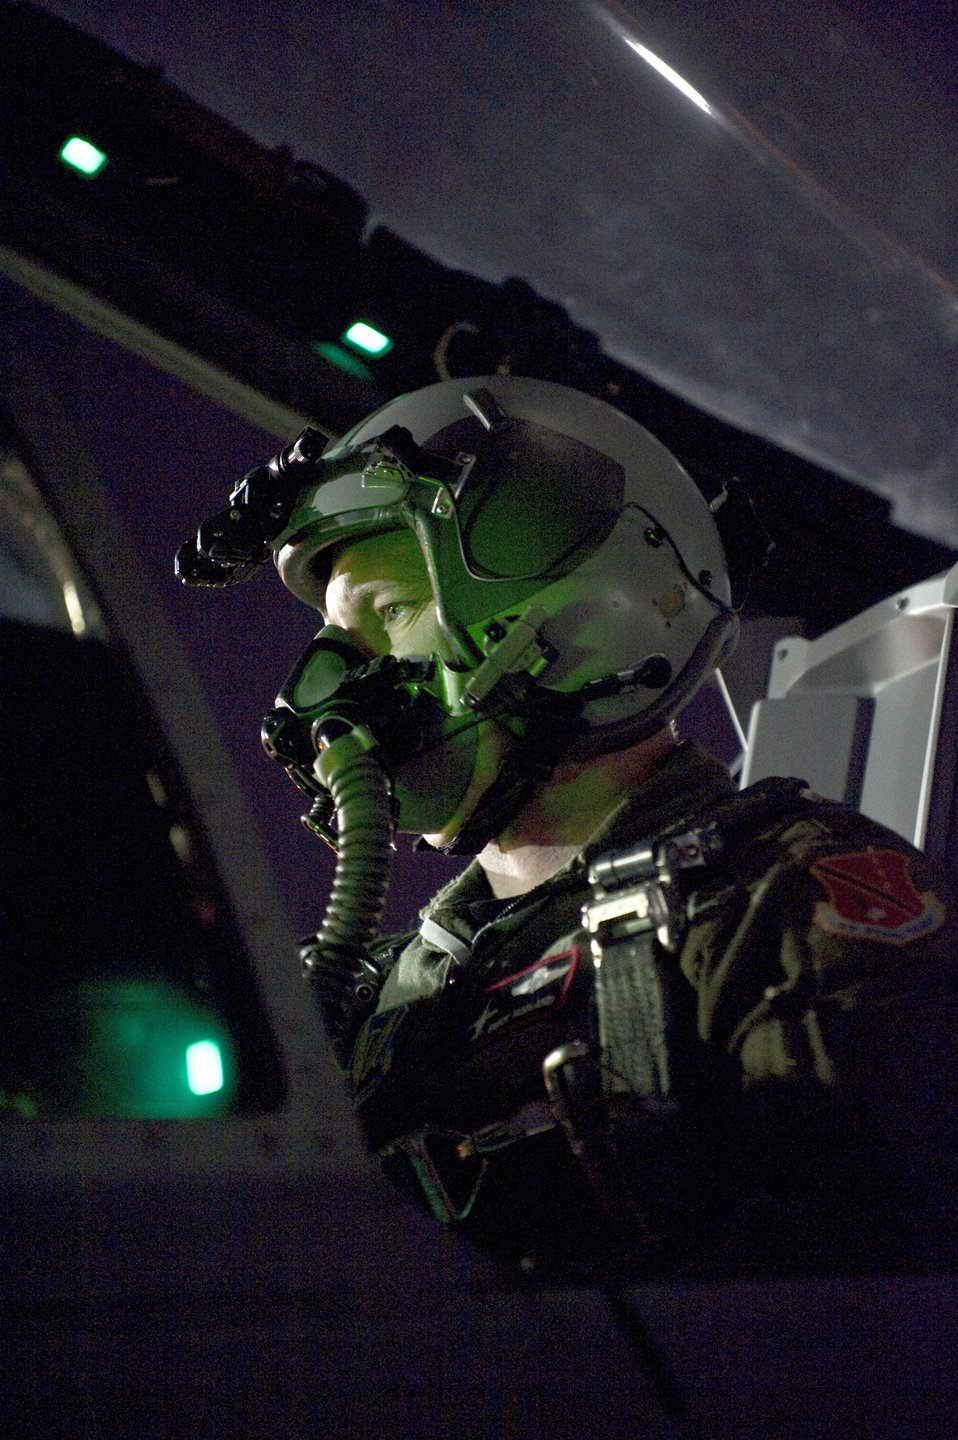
Red Flag 11-3

Maj. Eric Nodland conducts preflight checks in the cockpit of an A-10 Thunderbolt II before a training mission Feb. 24, 2011, during exercise Red Flag at Nellis Air Force Base, Nev. Major Nodland is a pilot assigned to the Michigan Air National Guard?s 107th Fighter Squadron.